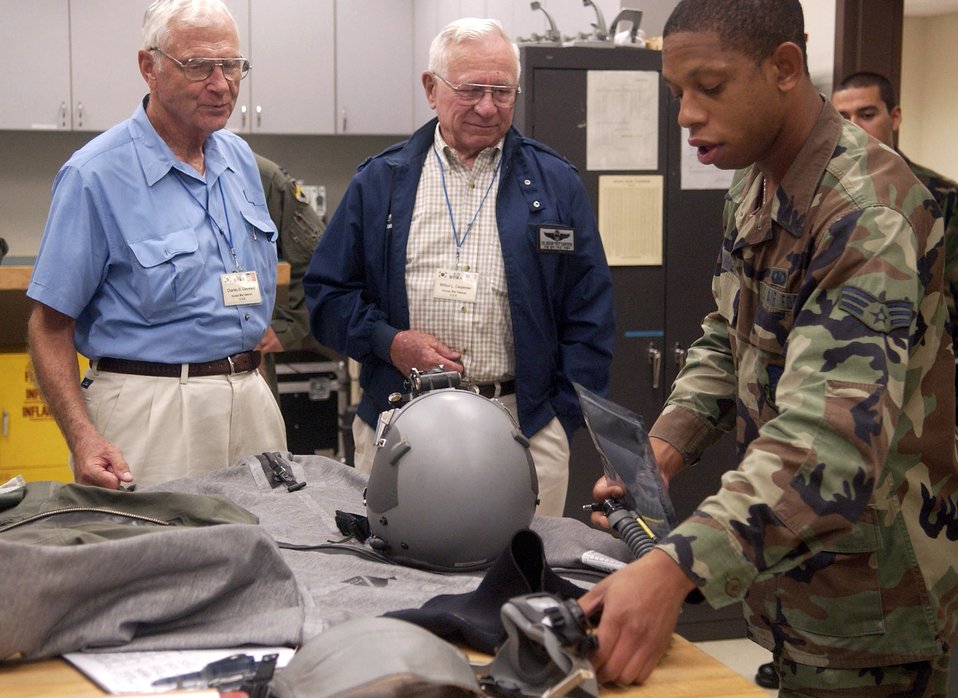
American pilots of yesteryear visit Kunsan, rekindle Korean War memories

Senior Airman Cortney Tanner shows some of the life support equipment used by today's pilots to Korean War veterans Lt. Gen. Charles Cleveland (left) and Col. Wilbur Carpenter Sept. 11 at Kunsan Air Base, South Korea. The veterans were visiting Kunsan and sharing their flying experiences with 8th Fighter Wing Airmen. Airman Tanner is a life support journeyman with the 35th Fighter Squadron.